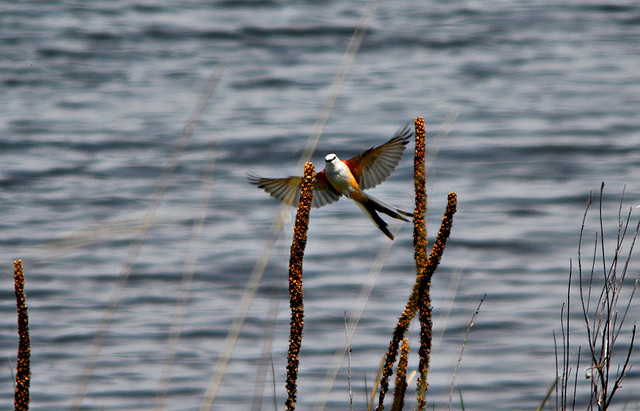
scissortail flycatcher

Malheur National Wildlife Refuge, OR